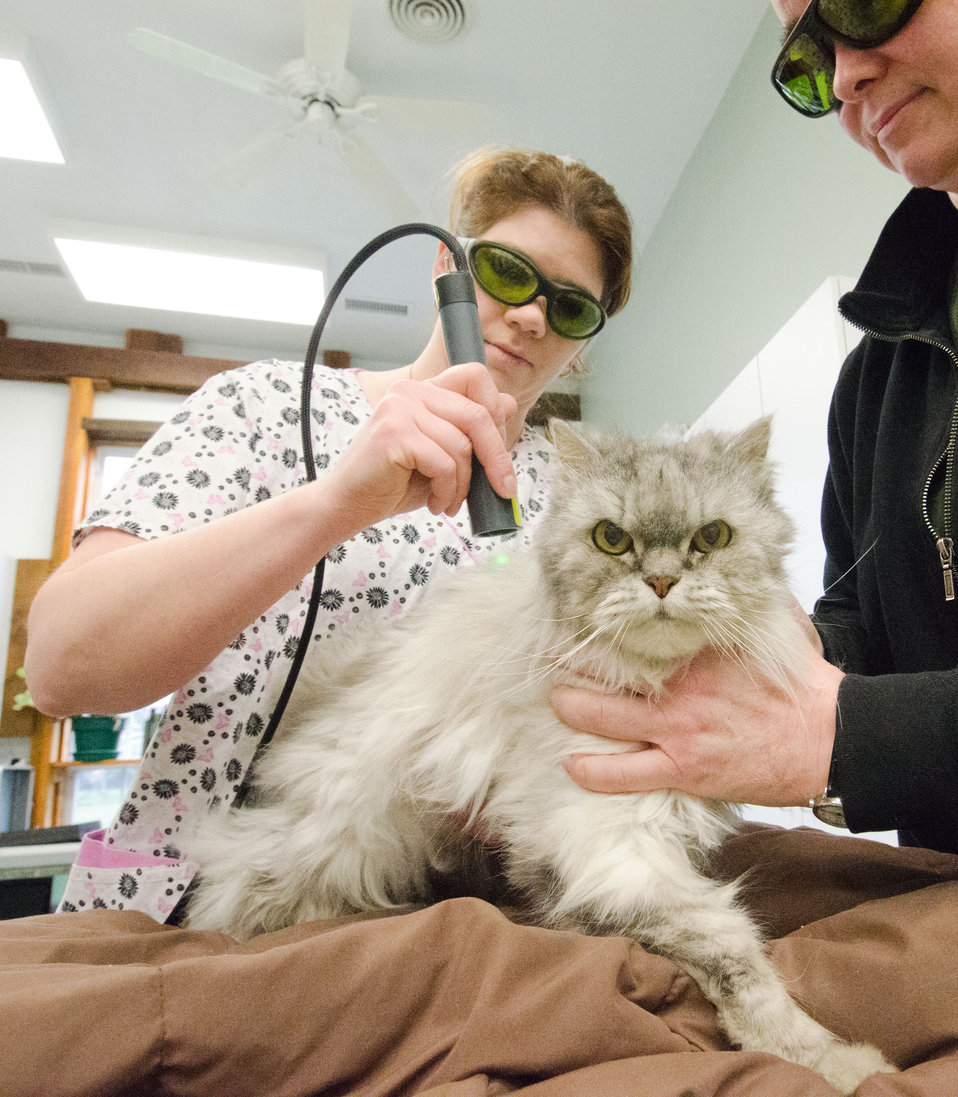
Veterinary technician Rebecca Blevins (left) uses laser light therapy on Molson the cat as Dr. Julie Holland (right) to have calcification of the spine on Tuesday, April 19, 2011 at Littlestown Veterinary Hospital in Littlestown, PA. Through the year it is expected that 30-40% of the electricity to run the diagnostic equipment, lights, laser, computers, any thing electrical will be generated from the 105 solar panels that were installed on the roof in mid September 2010. The hospital, received a grant from the U. S. Department of Agriculture, Rural Development under the Rural Energy for America Program (REAP) to have solar panels installed to help reduce their carbon footprint and to have cost effective electric power for the hospital. REAP provides grants for energy audits and renewable energy development assistance. The program also provides funds to agricultural producers and rural small business to purchase and install renewable energy systems and make energy efficiency improvements.